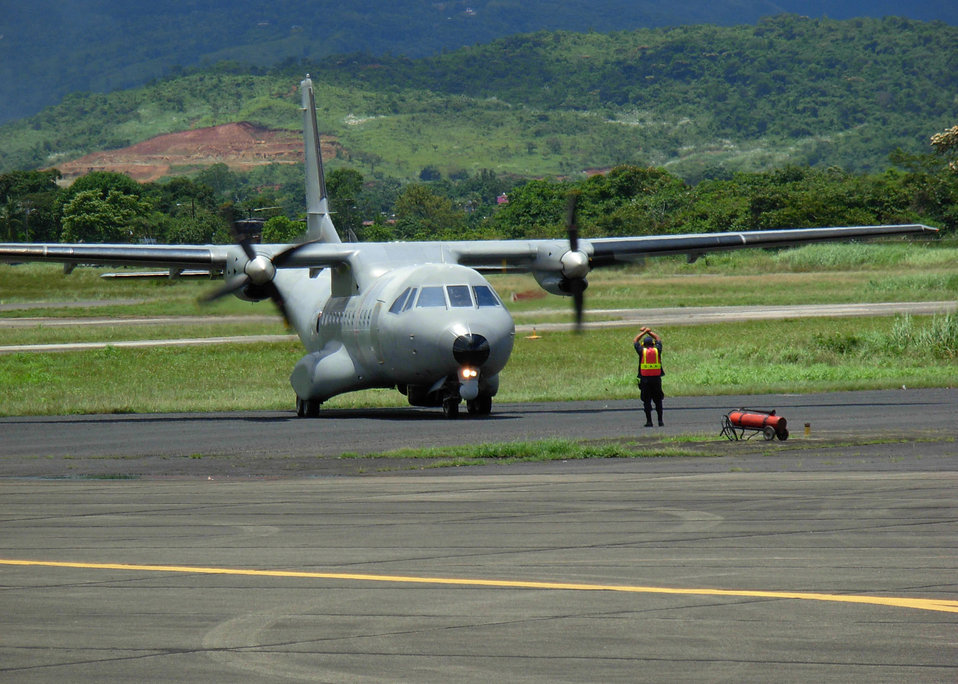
Airmen participate in joint exercise along Panama Canal

A Panamanian airman guides a Colombian aircraft onto the tarmac at Tocumen International Airport in Panama during PANAMAX 2007 Sept. 1. Civil and military forces from 19 countries are participating in the U.S. Southern Command joint and multi-national training exercise co-sponsored with the Government of Panama, in the waters off the coasts of Panama and Honduras.